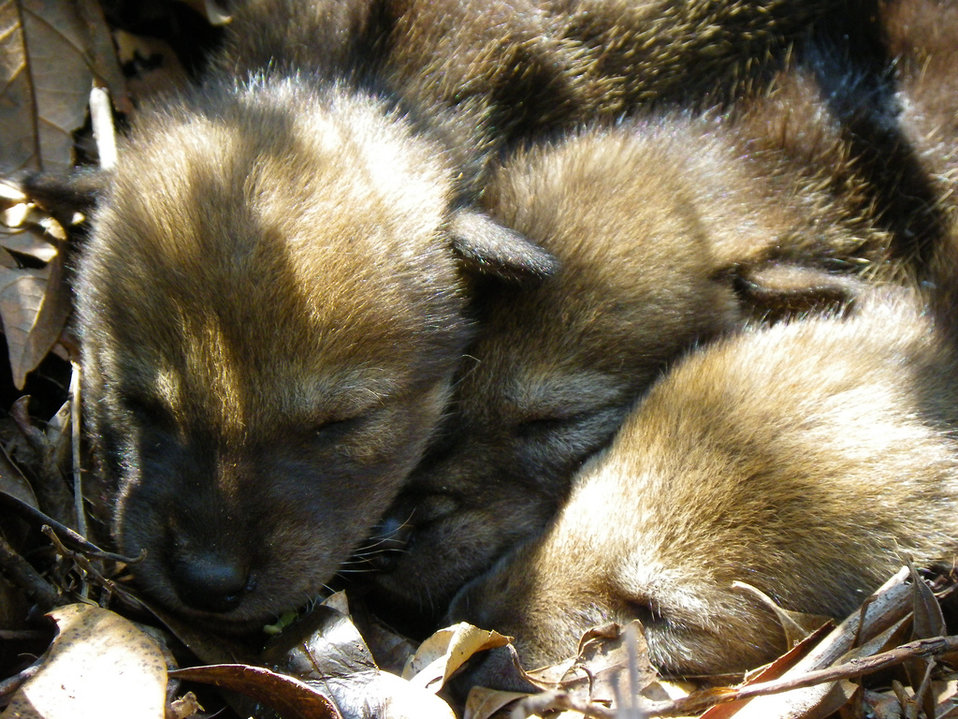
red wolf pups

endangered
Alligator River National Wildlife Refuge, NC
Photo: DJ Sharp/USFWS
Endangered red wolves are raised in captivity at FL's St. Vincent National Wildlife Refuge and released into the wild at Alligator River NWR, where these pups were born in 2011.